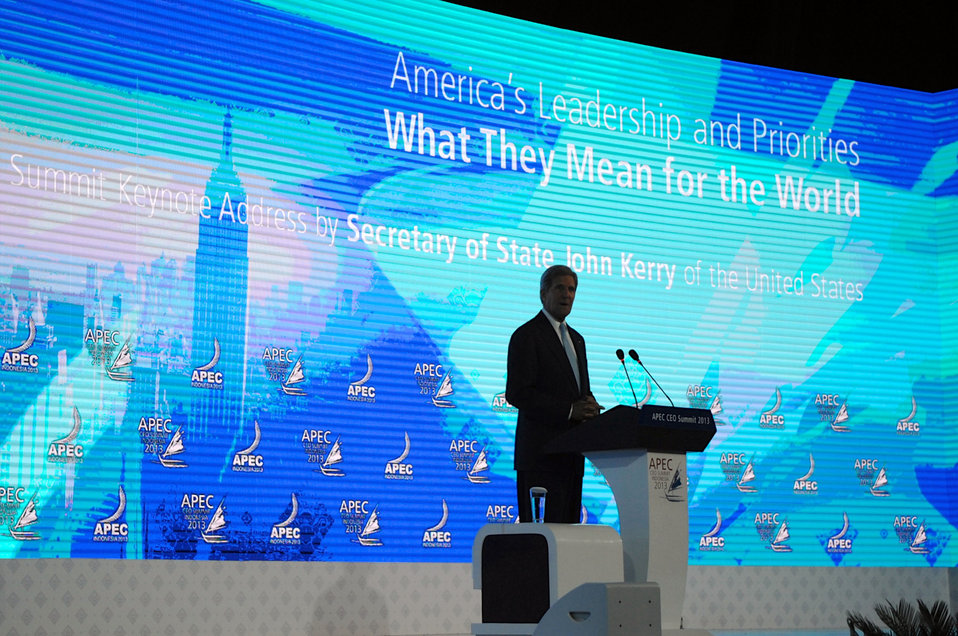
Secretary Kerry Addresses the CEO Summit

U.S. Secretary of State John Kerry delivers a speech at the CEO Summit in Bali, Indonesia, on October 7, 2013.